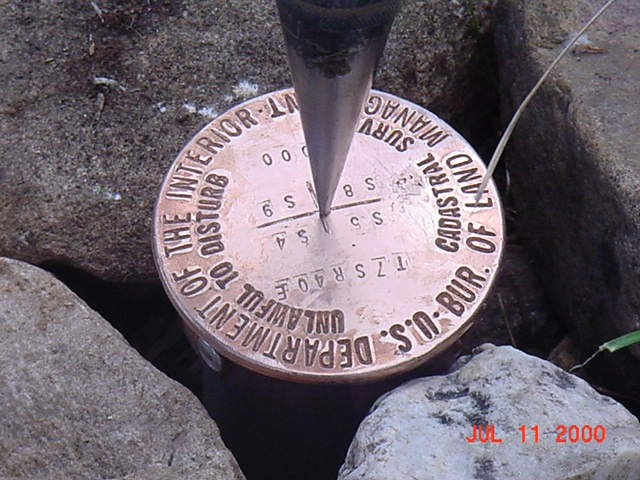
Cadastral Surveys Idaho Bureau of Land Management